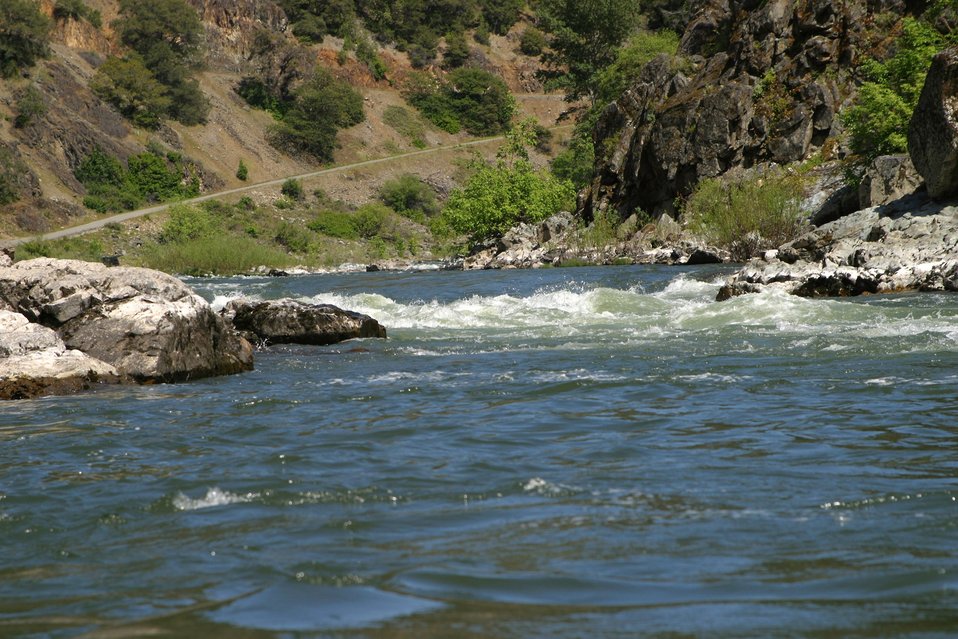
Wild section of the Rogue River from Grave Creek to Foster Bar. 3100 cfs at Grants Pass and 5300 at Agness.